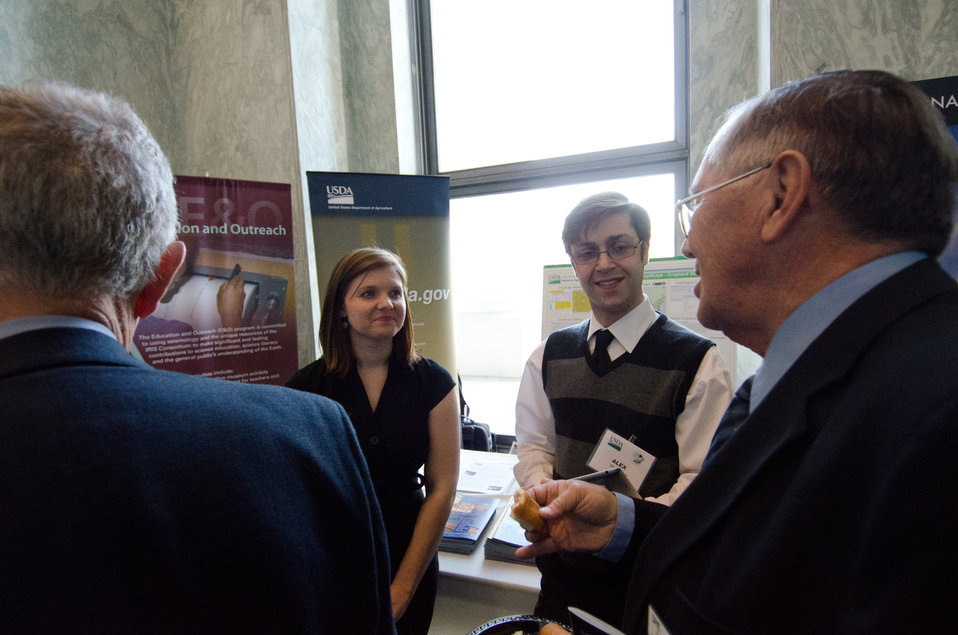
Alex Minchenkov (second from right), from the U.S. Department of Agriculture’s (USDA) National Agricultural Statistics Service’s (NASS) and Alice Eckert, National Institute of Food and Agriculture's representative provided information and pamphlets about the Research, Education, and Economics (REE) mission area during Congressional Visits Day at the Rayburn House Office Building in Washington, DC, on Wednesday, April 6, 2011. The event allows U.S. representatives, staff and Capitol Hill visitors the opportunity to learn about the REE mission and the impact on America. REEs leadership responsibility is to advance scientific knowledge related to agriculture through research, extension, and education.